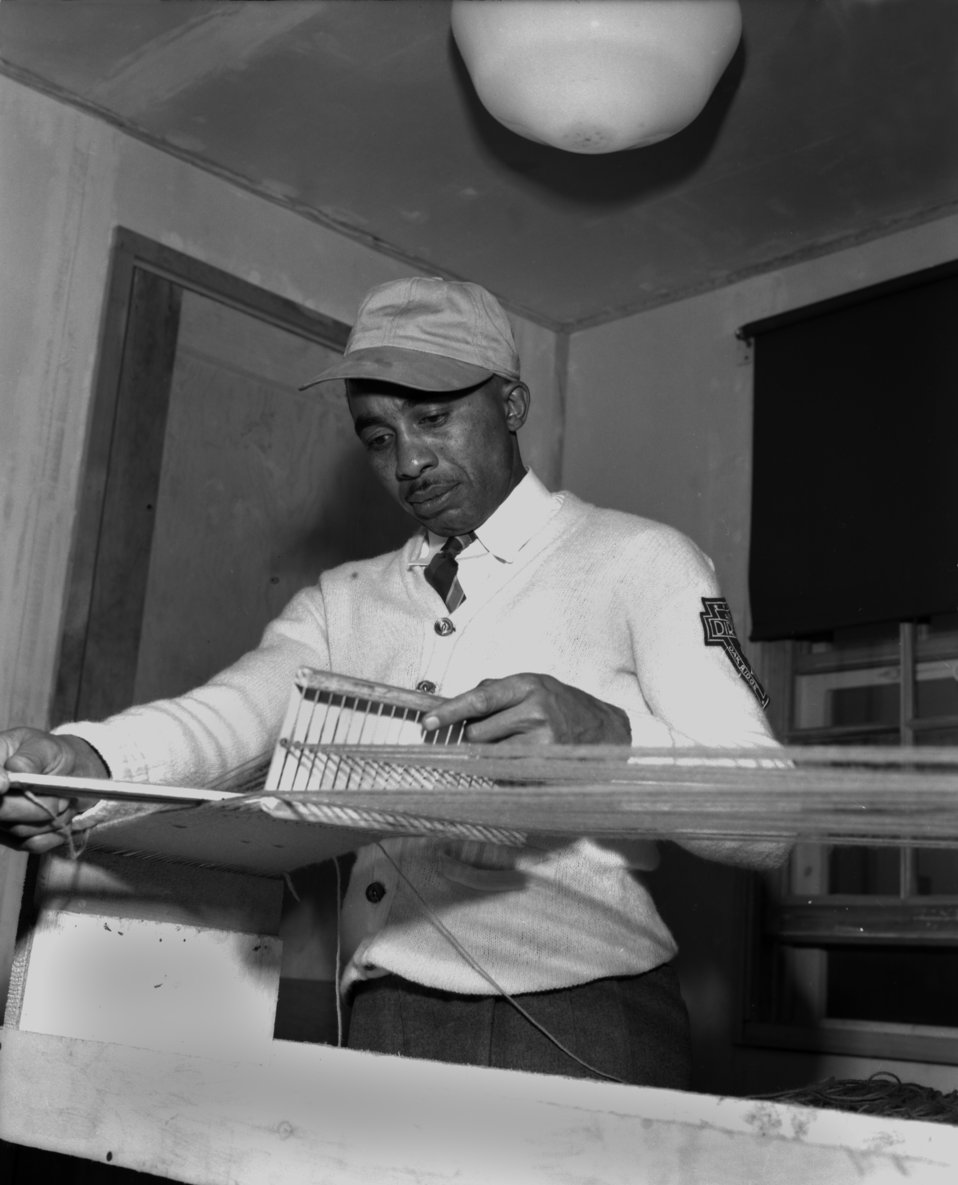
Recreation Director Oak Ridge

4055 DOE photo by L.P. Stokes Recreation Director Nichols Oak Ridge Oak Ridge Tennessee 12-4-1947